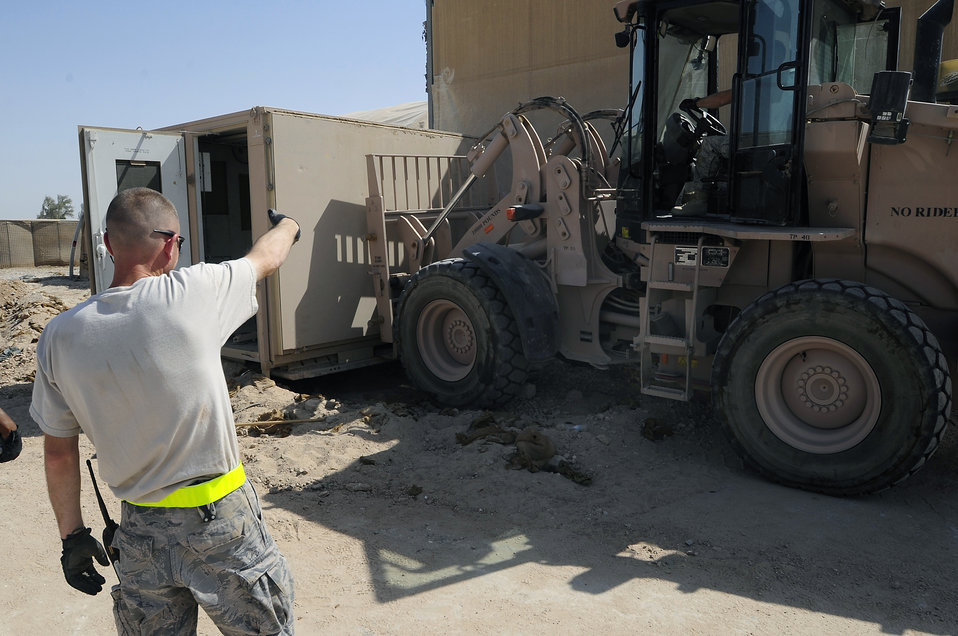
Reconstitution of materials supports fight, saves money

Master Sgt. Duane Patin guides a 10K forklift as it moves an expandable shelter that will be packed up and relocated, Sept. 30, 2009, at Ali Base, Iraq. Squadron members are downsizing and consolidating material and equipment to send to U.S. warfighters in Afghanistan. Sergeant Patin is assigned to the 407th Expeditionary Civil Engineer Squadron and deployed from Elmendorf Air Force Base, Alaska.